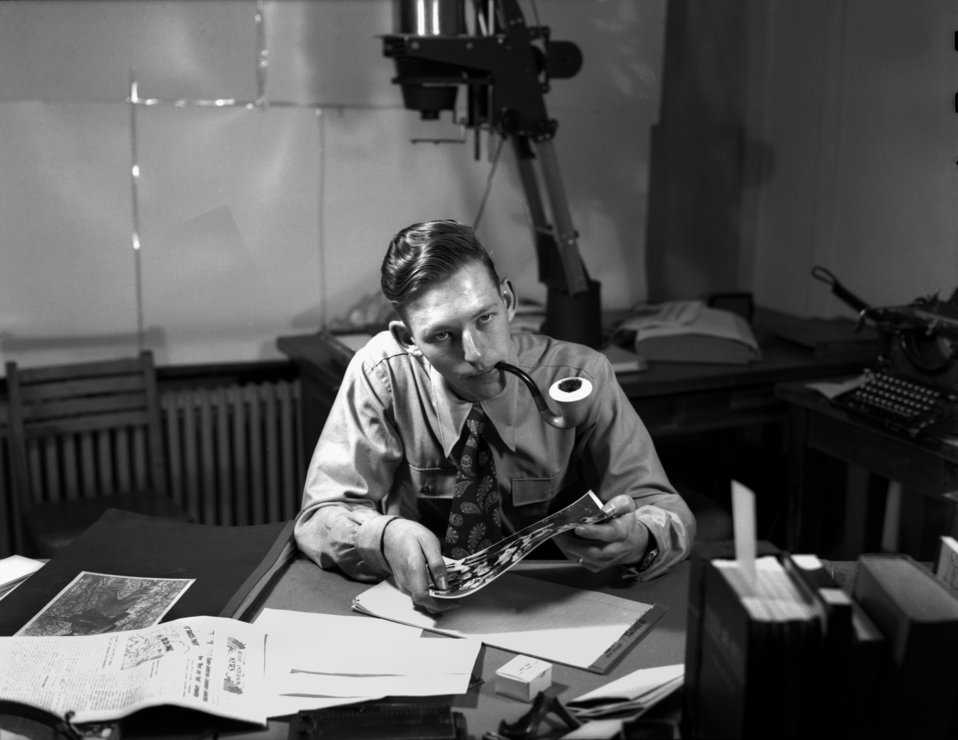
Ed Westcott at His Desk Oak Ridge

875-1 DOE Photo 1948 Oak Ridge Tennessee